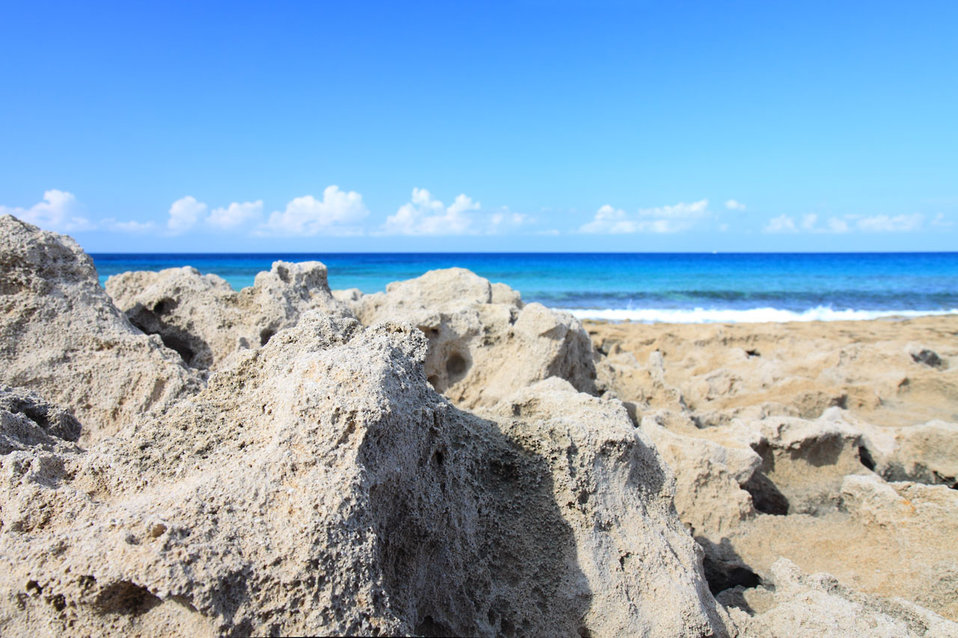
Rocky shore

Rocks on coast with sea in the background.